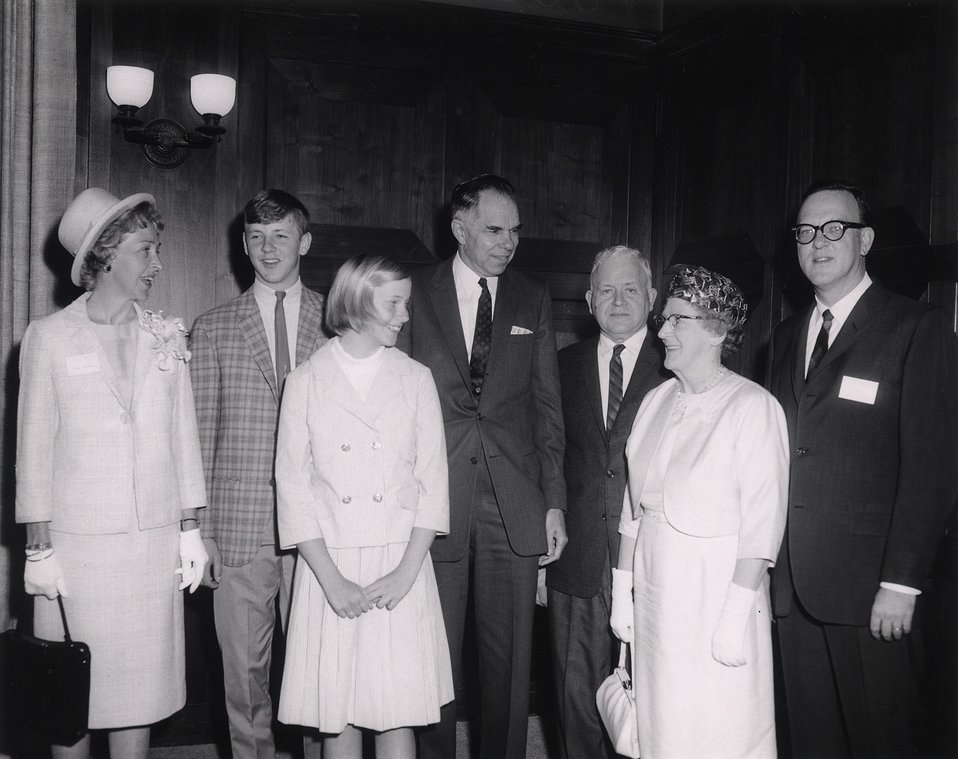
E. O . Lawrence Award Ceremony. National Academy of Sciences. April 29, 1965. Dr. Seaborg, Mr. Edlund and Family.